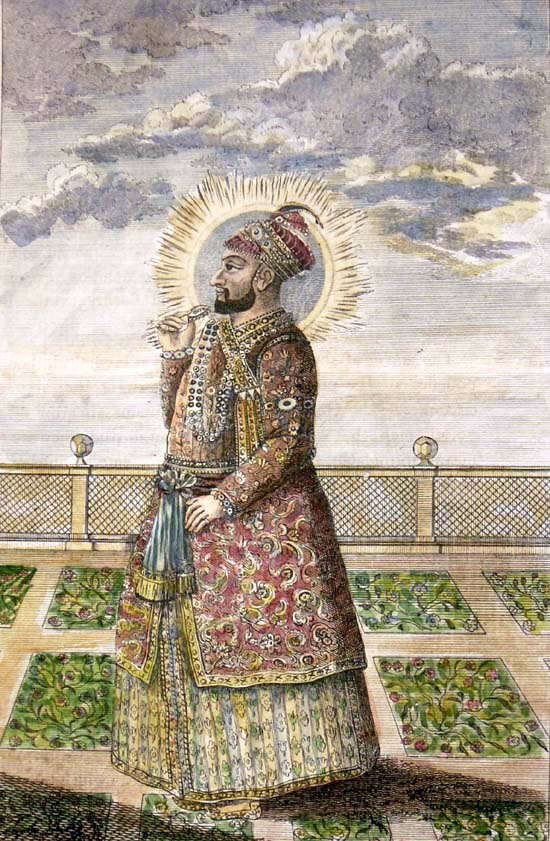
'Hyder Ali,' a steel engraving from the 1790's (with modern hand coloring)